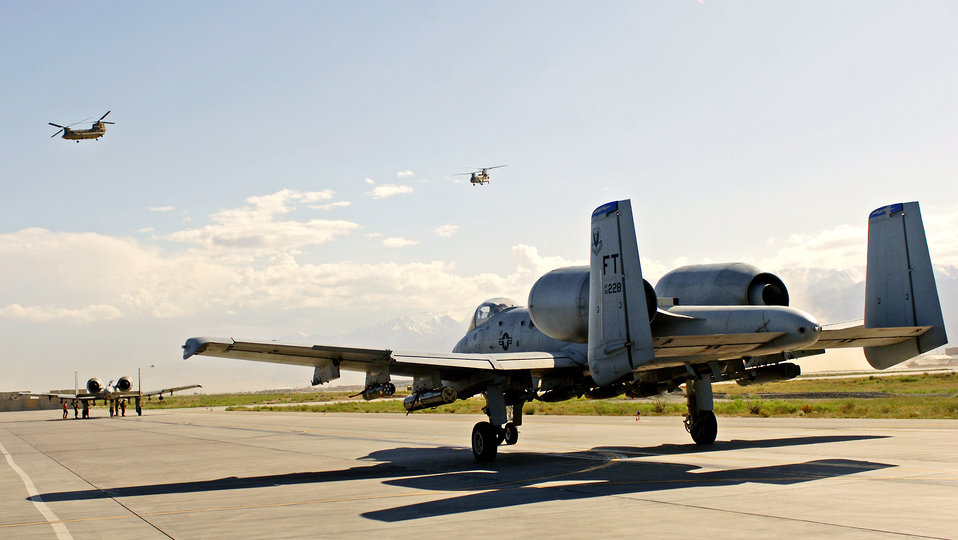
Wing surpasses combat hour milestone

A pair of A-10 Thunderbolt IIs from the 74th Expeditionary Fighter Squadron at Bagram Airfield, Afghanistan, get their final weapons check before taking off on a close-air-support mission June 9. In May, aircrews from the 74th EFS and the 336th EFS, who fly F-15E Strike Eagles, together logged a total of more than 5,000 combat flight hours over Afghanistan. The aircraft assigned here provide close-air support and airborne intelligence, surveillance and reconnaissance for American and coalition ground troops.